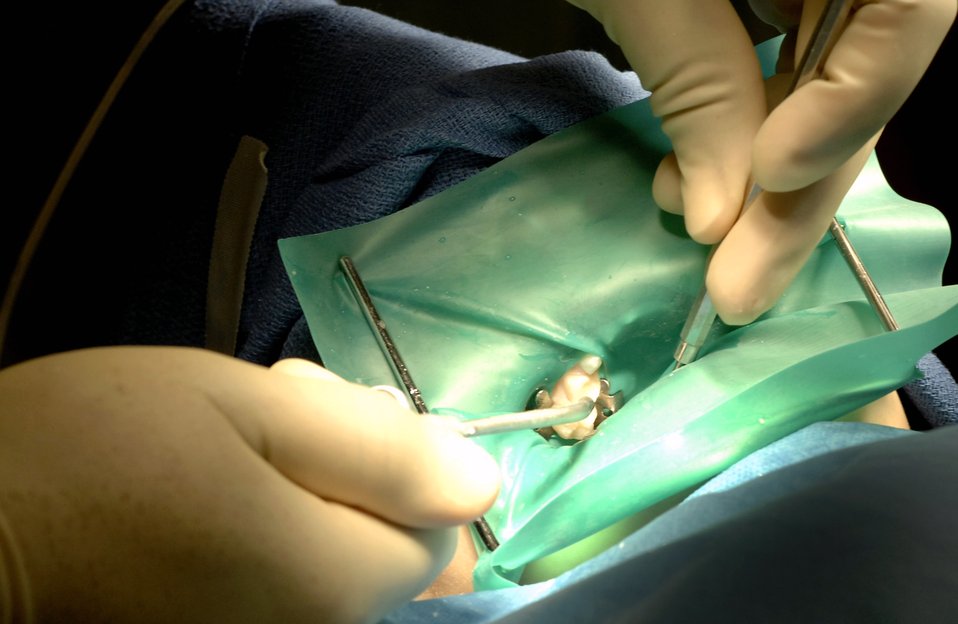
Open wide

Capt. Corbet Ellison places a clamp to isolate a tooth during a dental rehabilitation surgery Jan. 29 at Aviano Air Base, Italy. Captain Ellison is a pediatric dentist assigned to the 31st Dental Squadron. The 31st DS provides services for more than 10,000 members and their families.